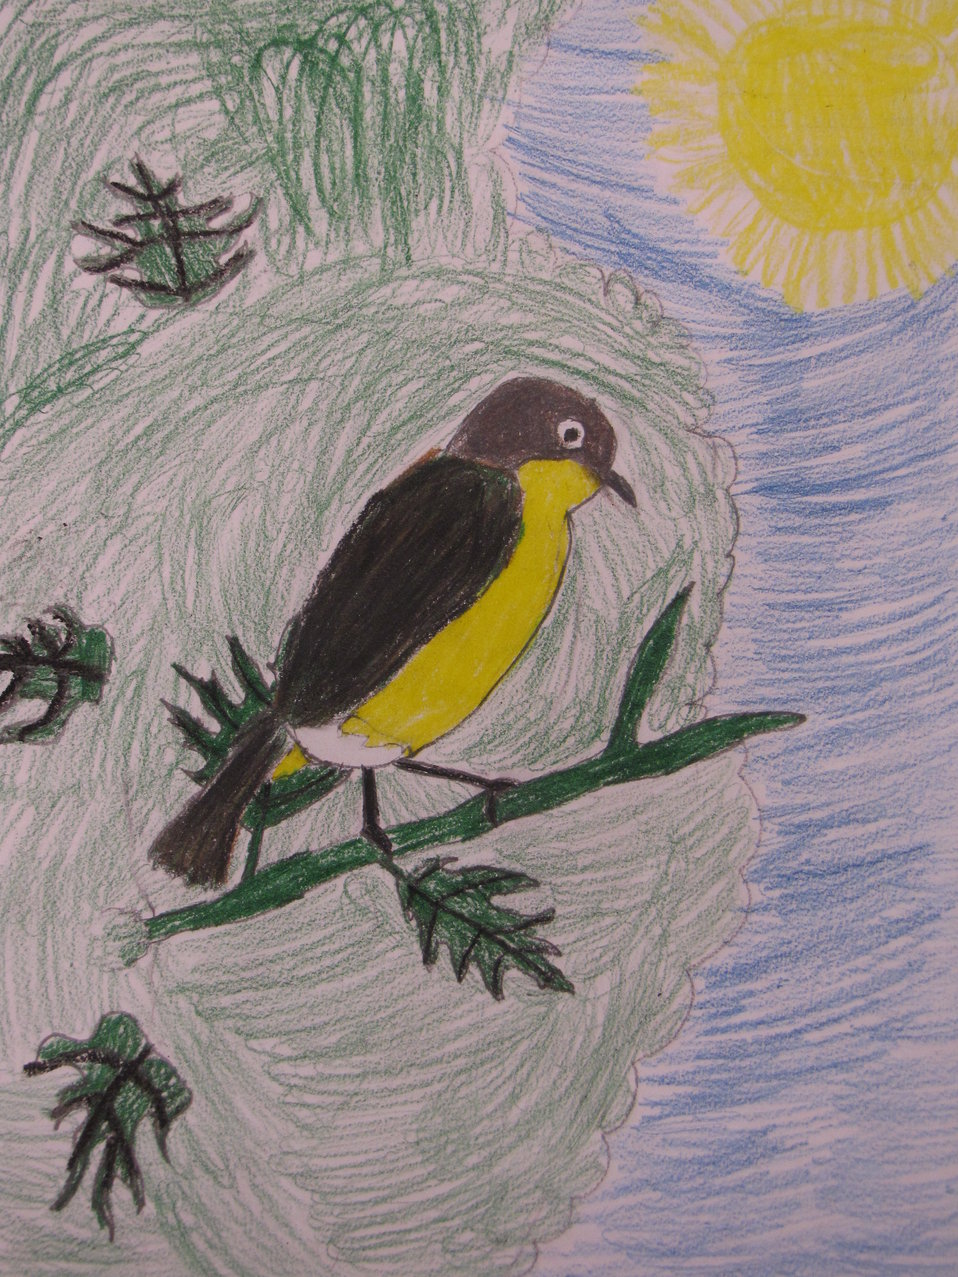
Nashville warbler, by Abigail Chase - 5th Grade. One of the class winners for the annual Bird Banner competition. Community school kids draw and color migratory birds and 90 of the winners from over 1000 entries are turned into poster-sized banners to hang down main street of Brigham City this summer.